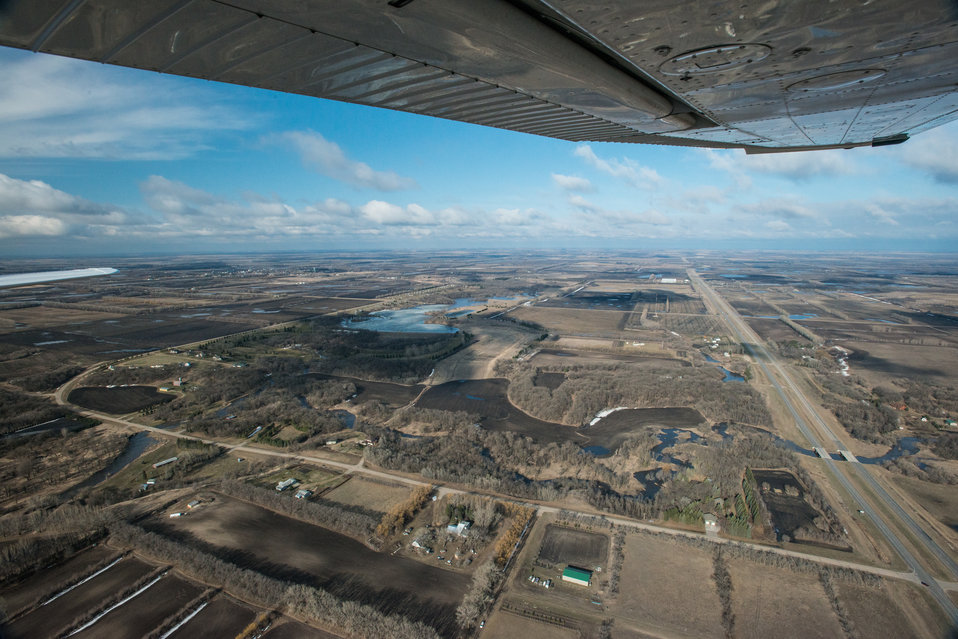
Larimore Dam, a Public Law PL83-566 Small Watershed Program, in Grand Forks County, ND, on Wednesday, May 1, 2013.